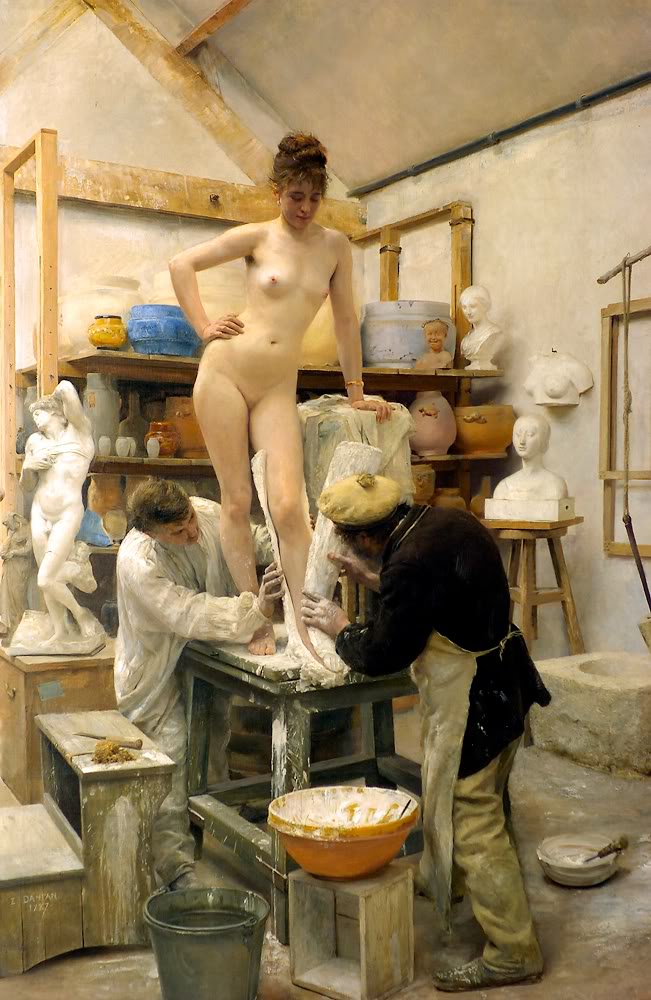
Deutsch: Naturabguss A Casting from Life , Gothenburg Museum of Art